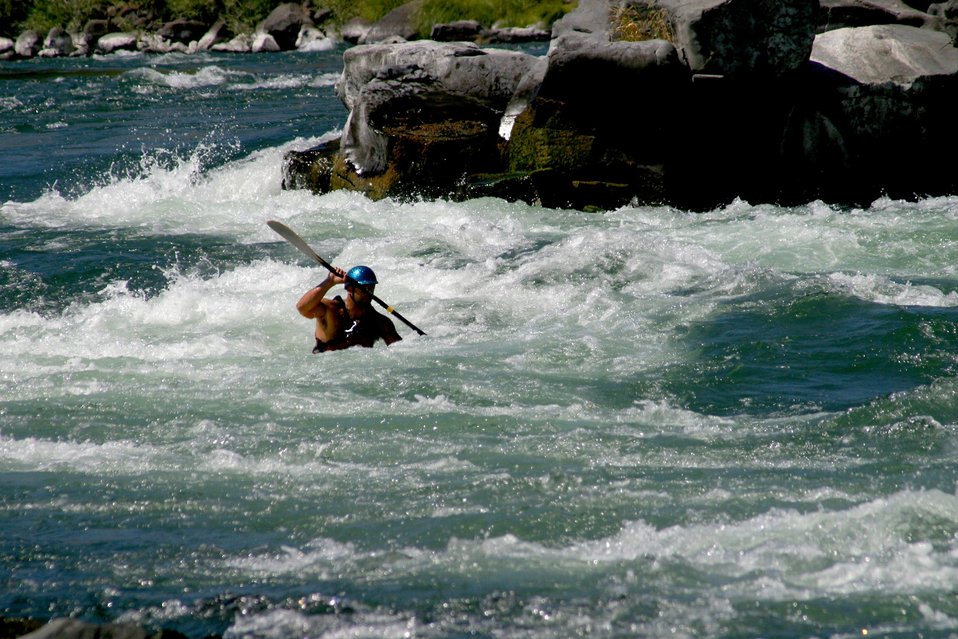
Wapinitia Rapids class III, has large roller coaster waves. 7/26/03 Pelton Dam 3600 cfs: Moody Rapids 4300 cfs.